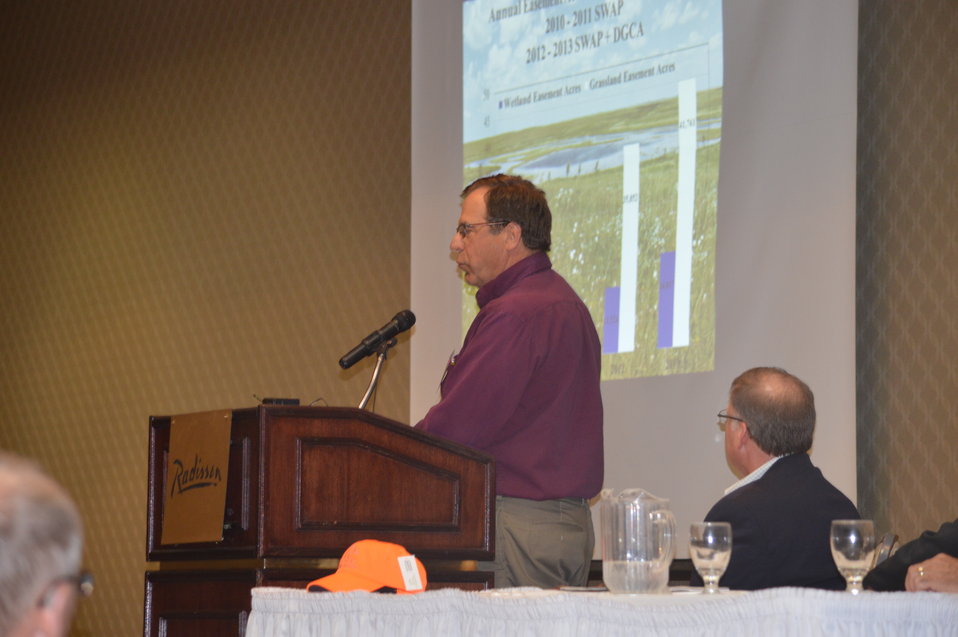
Lloyd Jones presents about grassland and wetland easements

Through the efforts of Ducks Unlimited and its partners, a Prairie Summit meeting was held in June 2013 in Bismarck, North Dakota, bringing key stakeholders to the table to identify and begin to address the immediate needs of the overall effort to conserve wetlands and grasslands, as well as bring media attention to the issues at hand and the urgency of the situation.